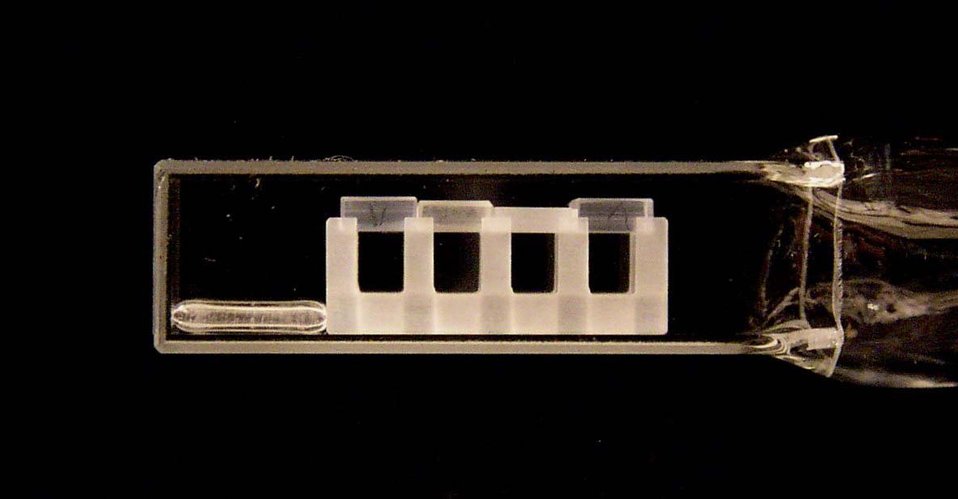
Bose-Einstein Condensate

JILA scientists measured how temperature affects the Casimir-Polder force using an apparatus that holds four small squares of glass inside a vacuum chamber. A cloud of ultracold atoms in a Bose-Einstein Condensate (BEC) was held a few micrometers below one piece of glass, and the force was calculated based on the wiggling of the BEC. Warmer glass magnified the attraction between the surface and the atoms.

Credit: E. Cornell group/JILA